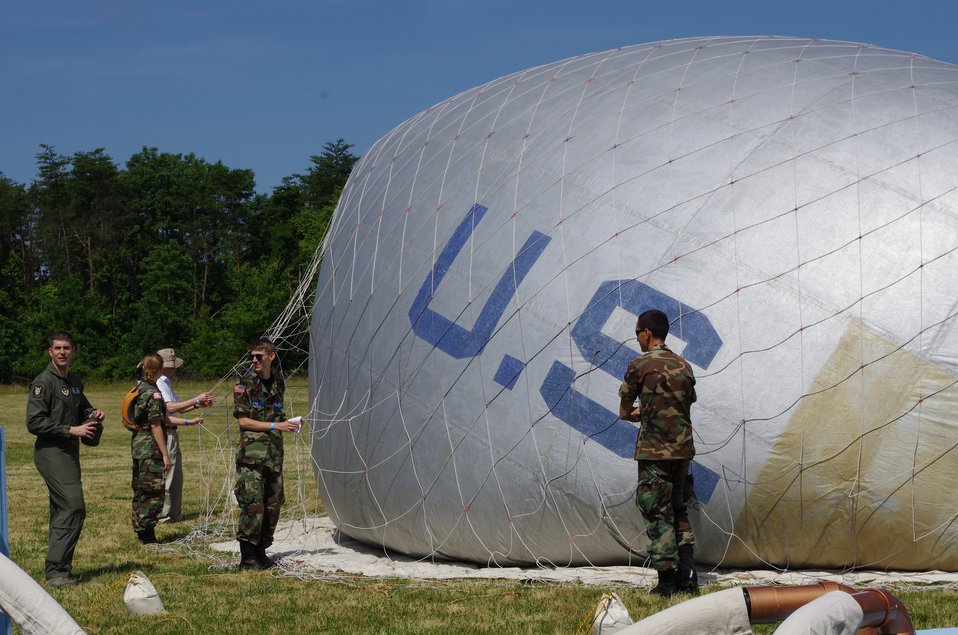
Old Balloon, young pilots

Maj. Nathan McClure, an Air Force Fellow with the Department of Transportation, guides his team of Civil Air Patrol cadets in the inflation of a Civil-War era balloon near Chantilly, Va., June16, 2012.